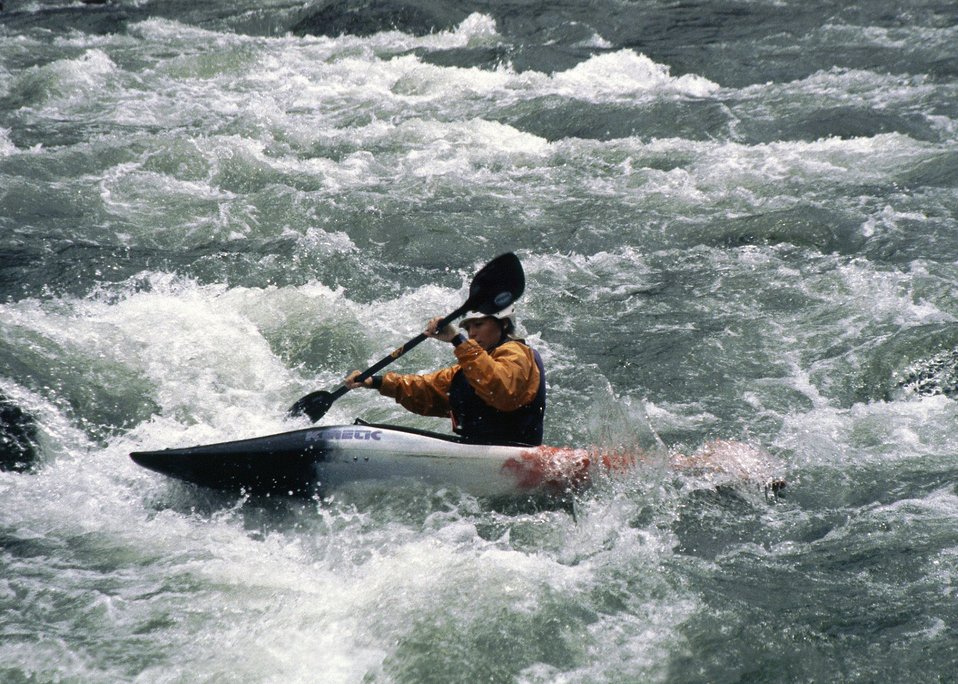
Man white water rafting